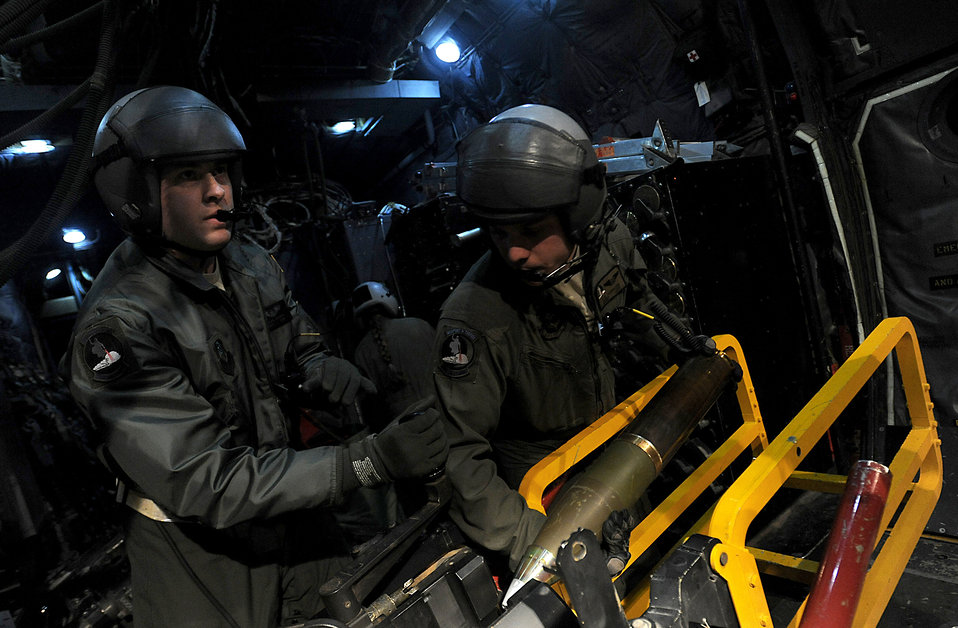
'Spooky' training

Airmen from the 4th Special Operations Squadron load a 105mm gun aboard an AC-130U Spooky Feb. 3, 2011, during a training mission at Hurlburt Field, Fla.